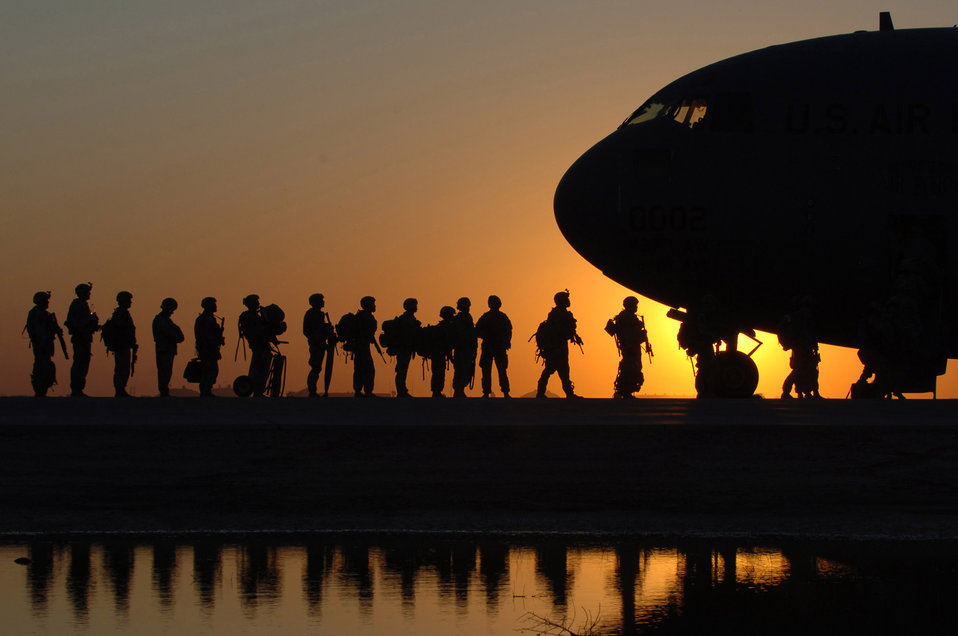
We're boarding, pass it on

The sun sets behind a C-17 Globemaster III Nov. 17 at Joint Base Balad, Iraq, as Soldiers begin boarding. C-17s can carry payloads up to 169,000 pounds and can land on small airfields. The C-17 is deployed from the 437th Airlift Wing at Charleston Air Force Base, S.C.